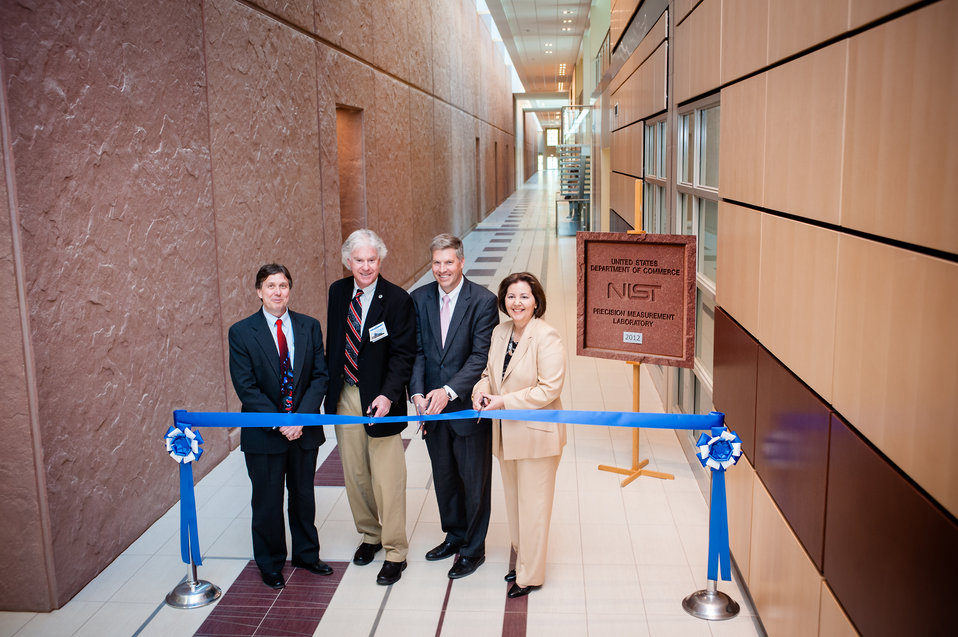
PML Ribbon Cutting

The new Precision Measurement Laboratory on the Boulder campus was officially dedicated on April 13. The large building boasts 280,000 square feet (26,013 square meters) of lab space, clean-room space, offices for scientists and support staff, conference facilities, and mechanical support space. Cutting the ribbon were Acting NIST Boulder Labs Director Kent Rochford, Mayor of Boulder Matt Appelbaum, NIST Director Pat Gallagher, and NIST Chief Facilities Management Officer Stella Fiotes. The event took place the same day as the opening of the new 56,000-square-foot (5,203-square-meter) expansion of JILA on the campus of the University of Colorado.